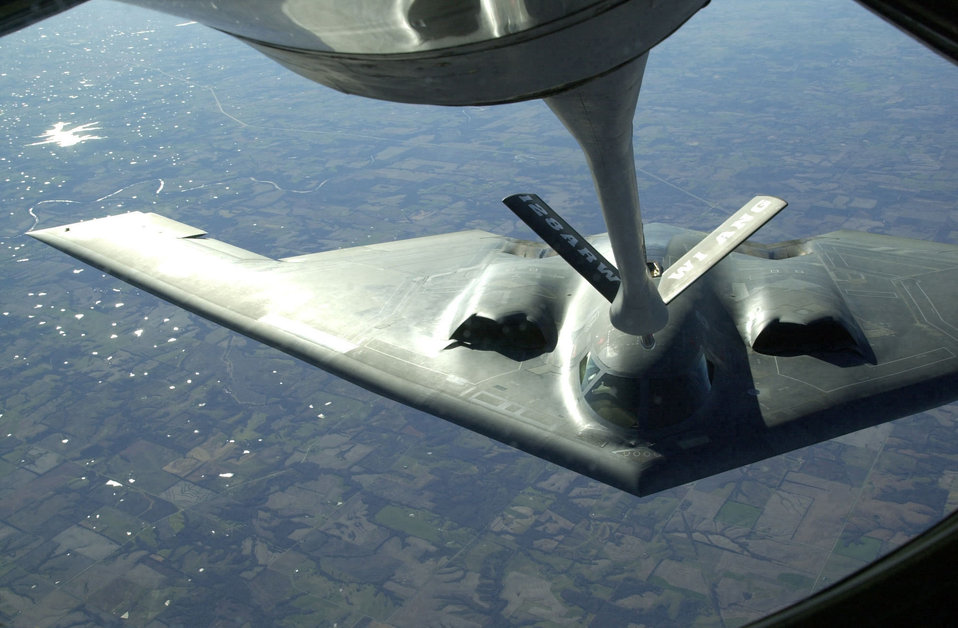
B-2 refueling

OPERATION NOBLE EAGLE -- A KC-135R Stratotanker from the Wisconsin Air National Guard's 128th Air Refueling Wing, refuels a B-2A Spirit during a training mission in support of Operation Nobel Eagle. The revolutionary blending of low-observable technologies with high aerodynamic efficiency and large payload gives the B-2 important advantages over existing bombers. Its low-observability provides it greater freedom of action at high altitudes, thus increasing its range and a better field of view for the aircraft's sensors. It can fly unrefueled for about 6,000 nautical miles.